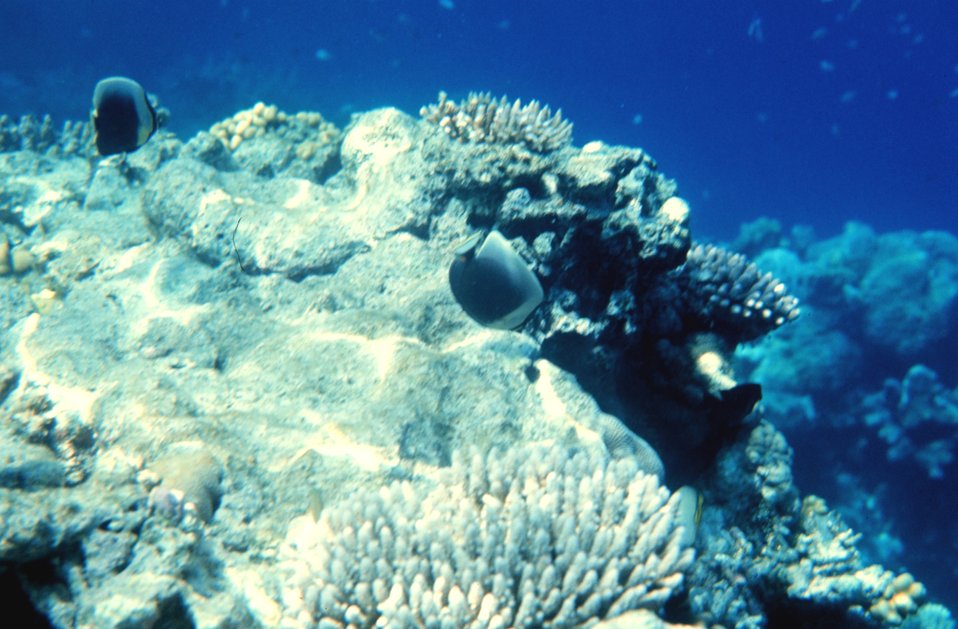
Chaetontidae sp. - a variety of butterfly fish.